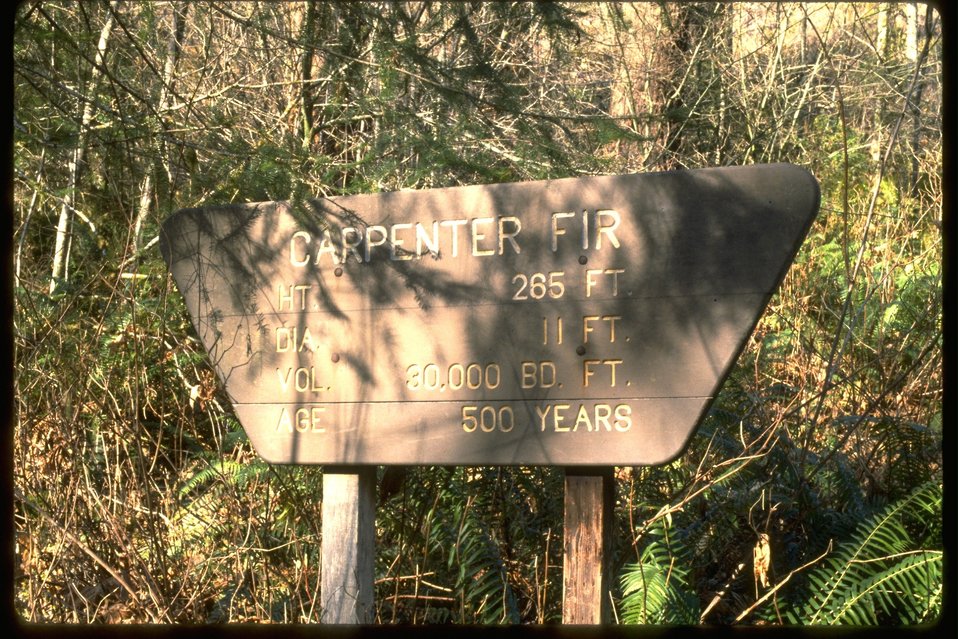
Carpenter Fir sign, with Volume, Age, Height, and Diameter of tree.